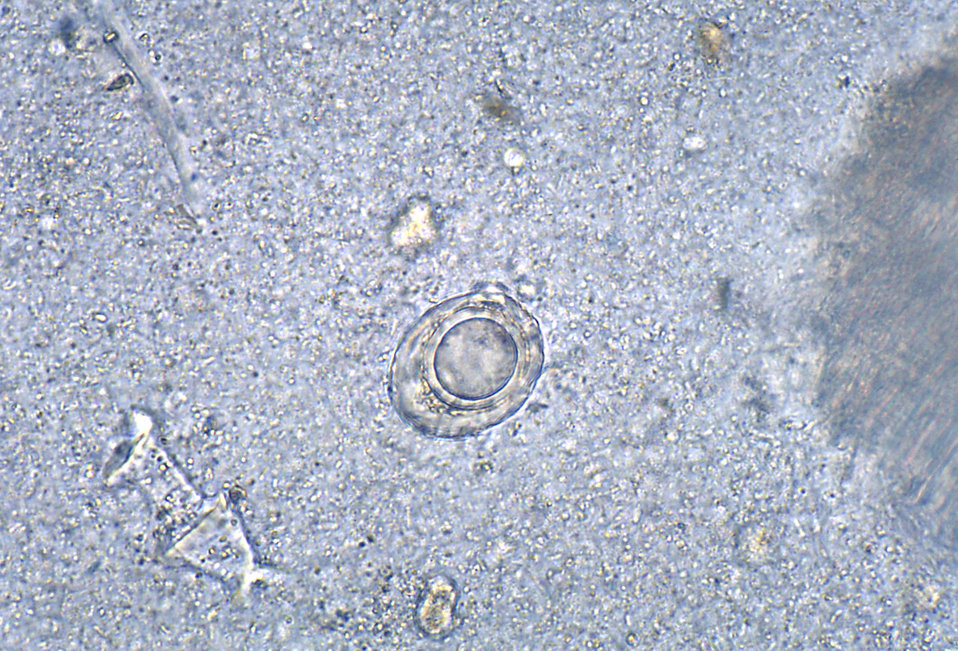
A photomicrograph of a Trichuris vulpis egg that has been removed from a dog's intestine.